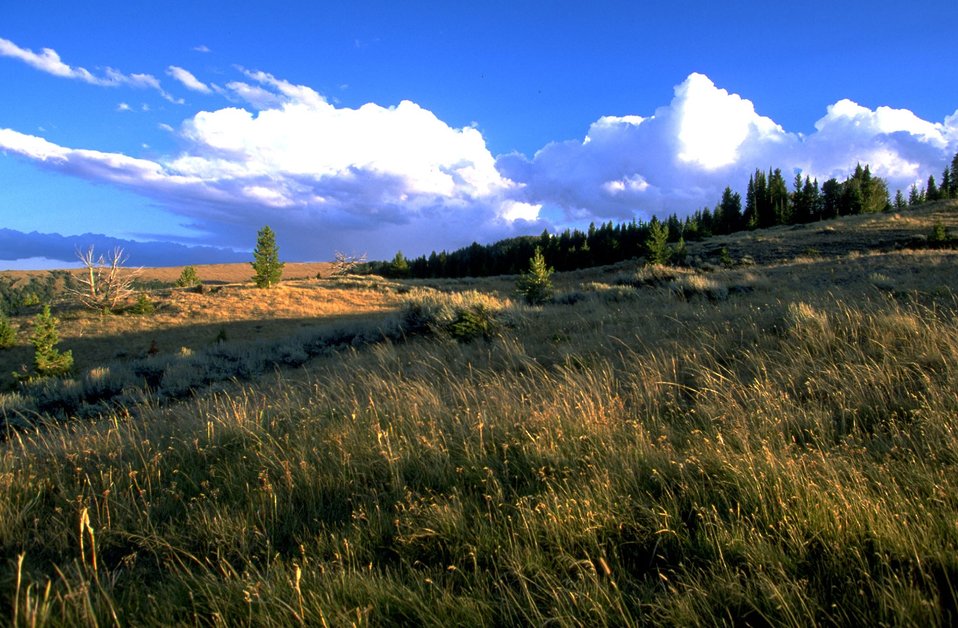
Grassy Hills